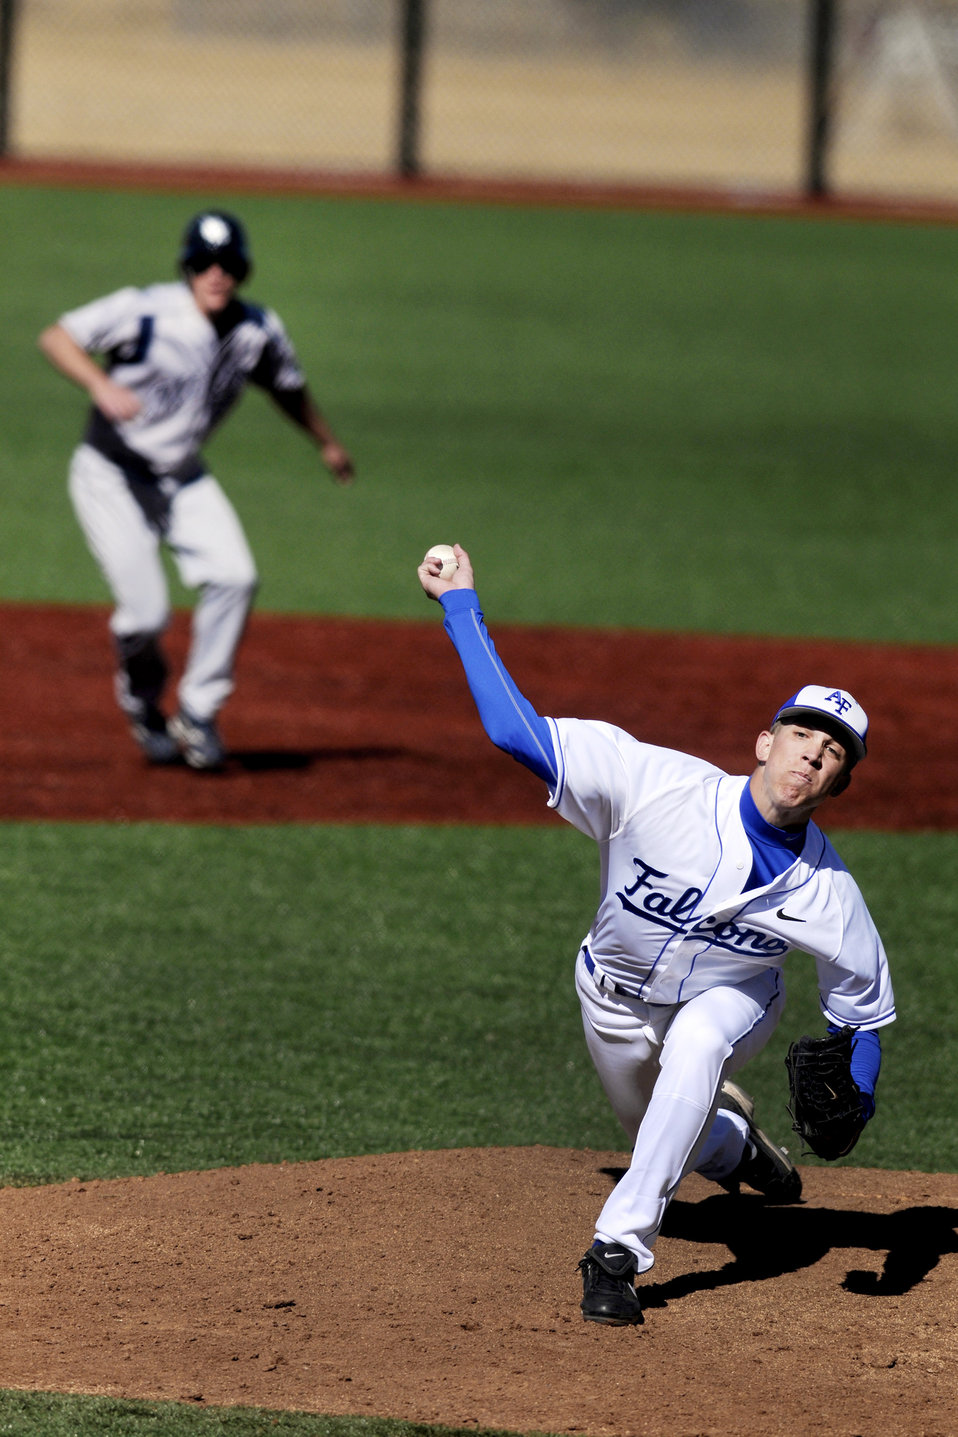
Falcons defeat Colorado School of Mines

Air Force freshman Matt Zettler throws a pitch with runners in scoring position during play against Colorado School of Mines March 16, 2010 at the U.S. Air Force Academy's Falcon Field in Colorado. Zettler pitched one inning for the Falcons in their 12-10 win.